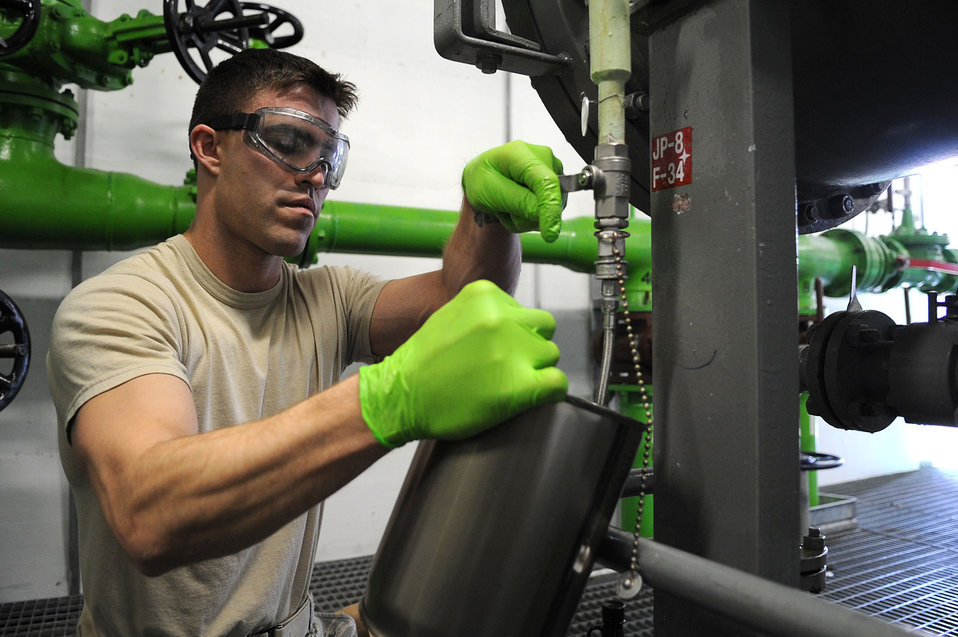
Odyssey Dawn

Senior Airman Lawson McLester, a fuel lab technician with the 31st Logistics Readiness Squadron at Aviano Air Base, Italy, takes fuel samples for routine testing during Joint Task Force Odyssey Dawn March 22, 2011. Joint Task Force Odyssey Dawn is the U.S. Africa Command Task force established to support the larger international response to the unrest in Libya. A broad coalition of nations are partnering to enforce U.N. Security Council Resolution (UNSCR) 1973, which authorizes all necessary means to protect civilians in Libya under threat of attack by Qadhafi regime forces. JTF Odyssey Dawn is commanded by Admiral Samuel J. Locklear, III.